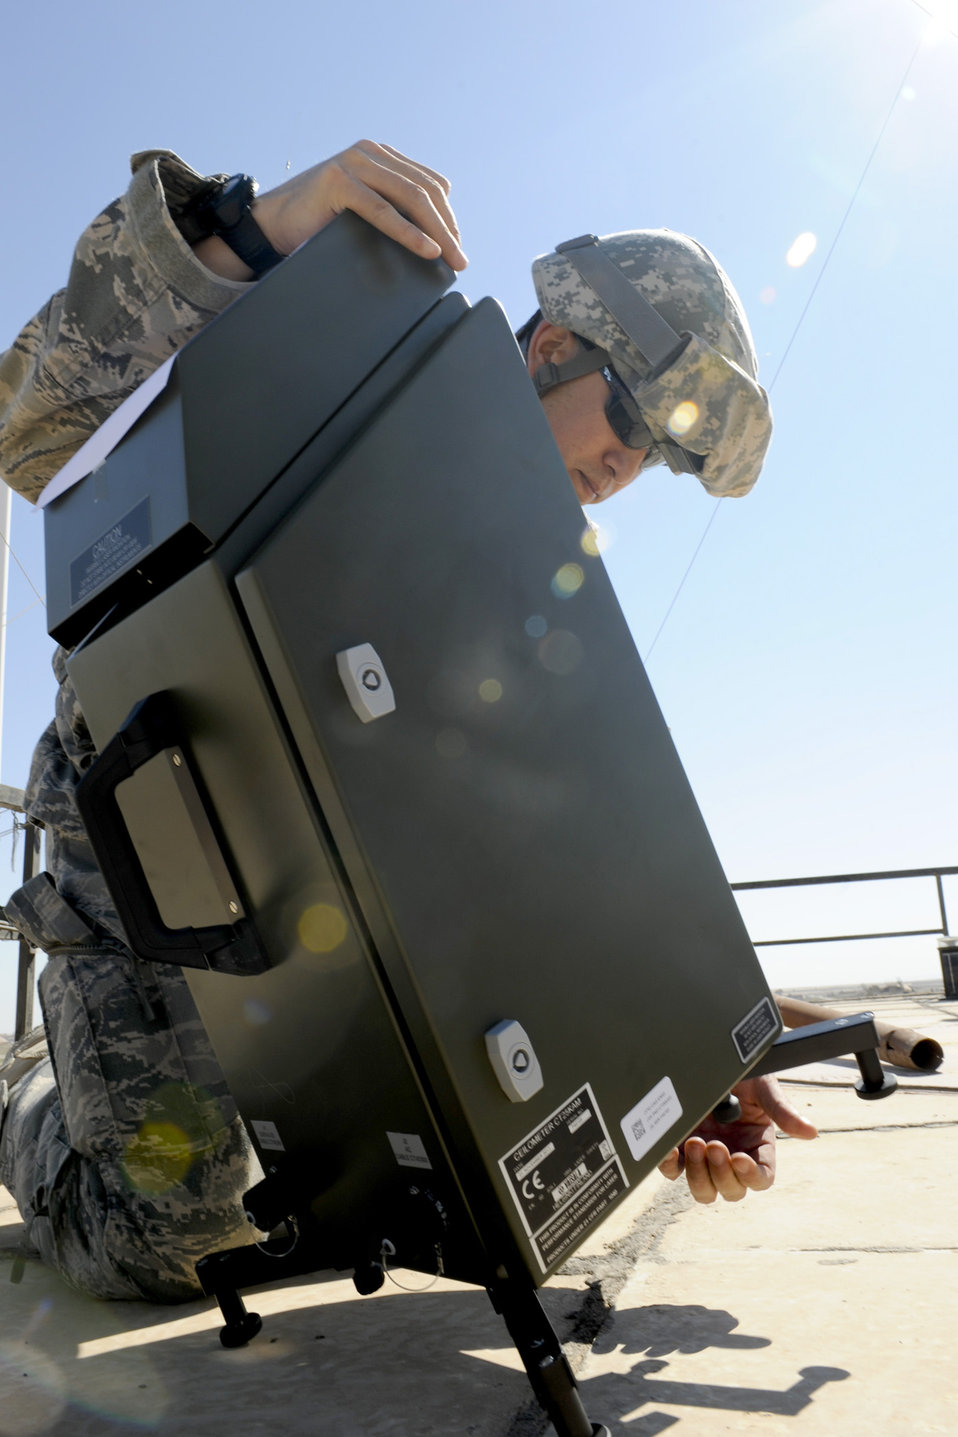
Airmen deliver weather gear to Iraqi air force

Master Sgt. Stephen Hale sets up part of a TMQ-53 weather observation system March 2, 2011, at Qayyarah West Airfield, Iraq. Sergeant Hale was part of a three-man weather team that traveled from Baghdad to retrieve U.S. Air Force equipment and install a newly purchased system as part of an ongoing process to set up a self-sustained Iraqi military weather service. Sergeant Hale is a 22nd Expeditionary Weather Squadron advising weather trainer.